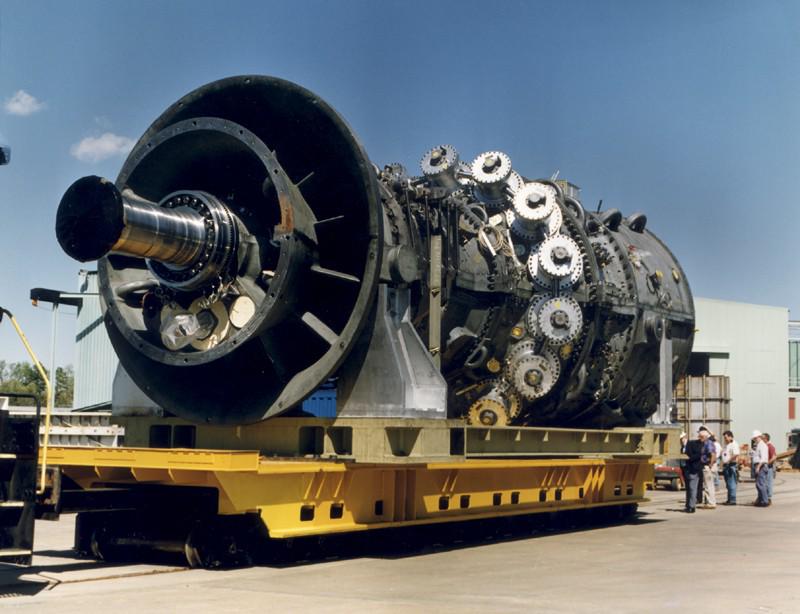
GENERAL ELECTRIC'S 400 MW ADVANCED GAS TURBINE, THE 7001H.

NATURAL GAS TURBINES ARE BEING DEVELOPED TO PRODUCE ELECTRICITY IN A SIMPLE, LOW COST ENVIRONMENTALLY FRIENDLY WAY. DOE'S NATIONAL ENERGY TECHNOLOGY LABORATORY (NETL) INITIATED THE ADVANCED TURBINE SYSTEMS (ATS) PROGRAM AND HAS PARTNERED WITH INDUSTRY TO PRODUCE A NEW GENERATION OF HIGH EFFICIENCY GAS TURBINES FOR CENTRAL STATION ELECTRICITY PRODUCTION, USING CLEAN BURNING NATURAL GAS.